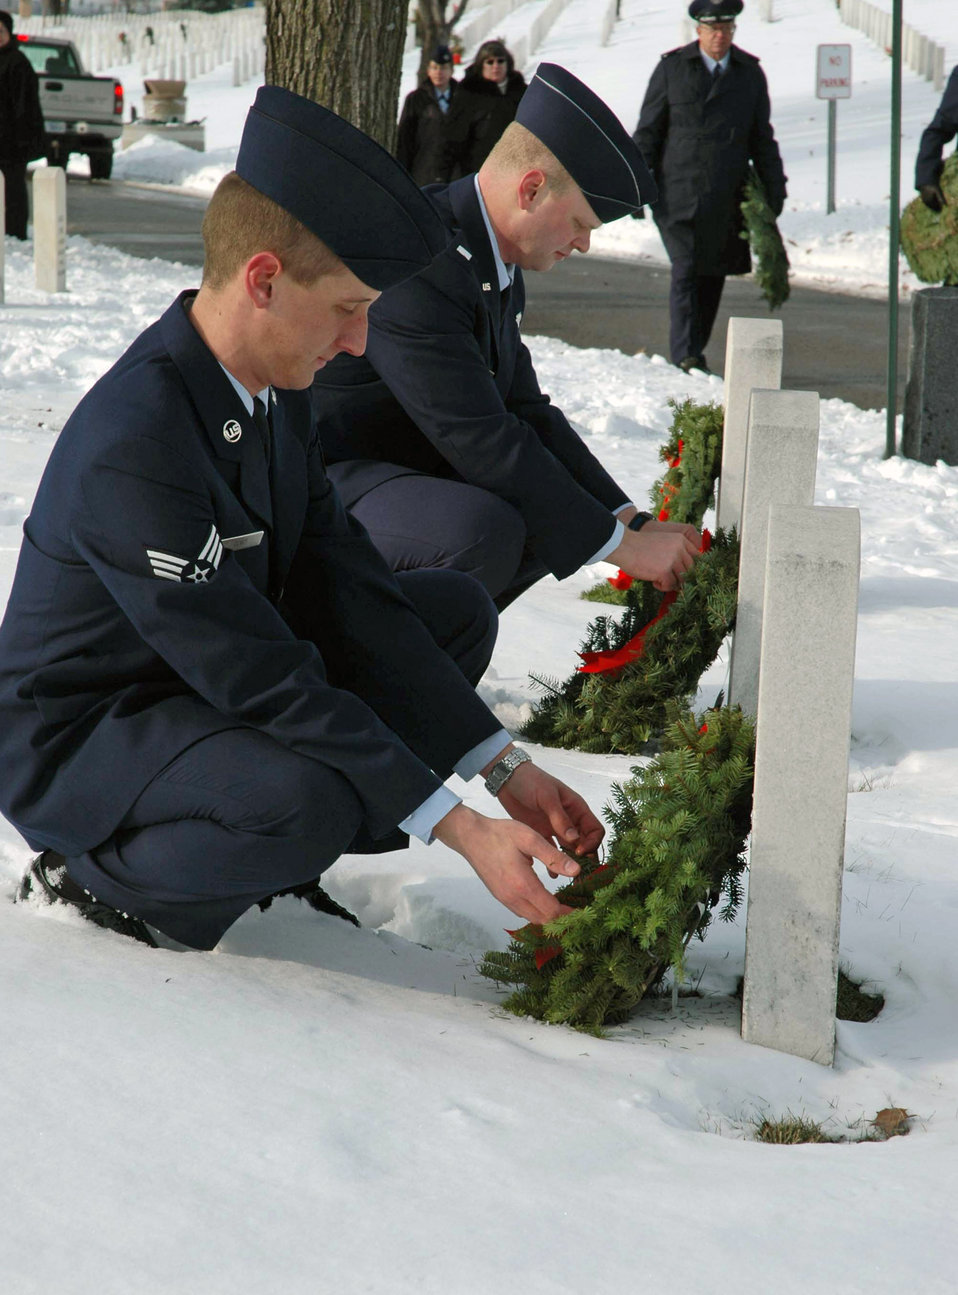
Airmen participate in Wreaths Across America

Senior Airman Justin Gort (left) and 1st Lt. Brandon Schrader lay wreaths Dec. 13 at Fort Snelling National Cemetery, Minn. The two are assigned to the 96th Airlift Squadron from the 96th Airlift Squadron from the Minneapolis-St. Paul Joint Reserve Station in Minnesota.